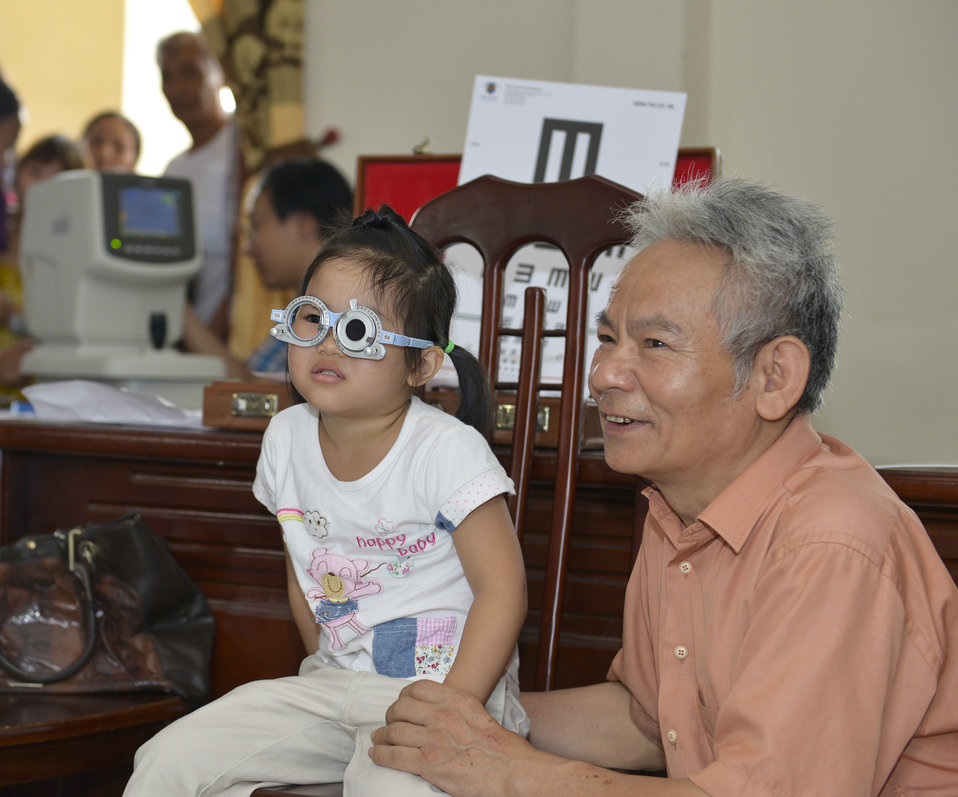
Eye screening for kindergarten children in Quoc Oai district of Hanoi

Quoc Oai, Hanoi. May 31, 2014.